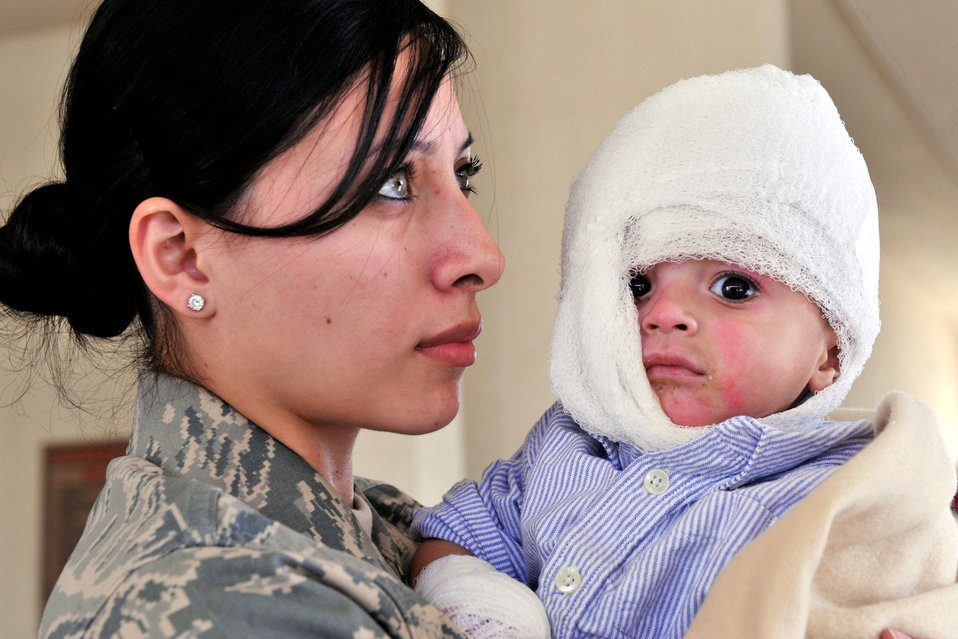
Family treated at CJTH

Senior Airman Mabel Aguirre and Ajamal Hazrat wait for transportation Jan 11, 2011, at the Craig Joint Theater Hospital at Bagram Airfield, Afghanistan. Ajamal and several of his family members were injured after a propane tank used to heat their home exploded. Airman Aguirre is a medical technician with the 455th Expeditionary Medical Operations Squadron.